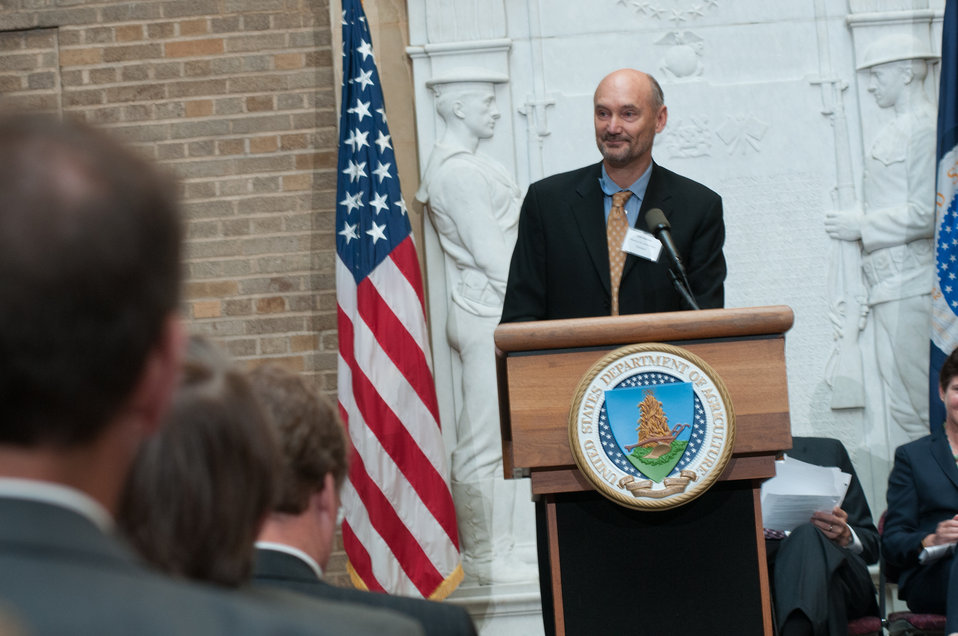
Alliance for Green Heat, President John Ackerly, speaks during the U.S. Department of Agriculture (USDA) Wood Energy Memorandum of Understanding, and awarded wood energy grants announcements event, at the USDA Headquarters, in Washington, D.C., on Wednesday, September 11, 2013. Signing the MOU are partnership leaders Biomass Thermal Energy Council, Executive Director Joseph Seymour; Alliance for Green Heat, President John Ackerly, USDA Agriculture Deputy Secretary Krysta Harden; Pellet Fuels Institute Executive, Director Jennifer Hedrick; Biomass Power Association, President and CEO Bob Cleaves, and Secretary Thomas Vilsack who signed it earlier. Moderating the event is Under Secretary for Rural Development Doug O’Brien.
The partnership agreement focuses on promoting wood energy nationwide as a means to address fire risks, bolster rural economic development, improve air quality, and help meet the Obama Administration’s renewable energy and energy efficiency goals. These organizations support the use of wood energy across the scale of users – from residential users, to commercial and intuitional facilities, to industrial production of heat and or electricity to drive businesses and feed the electrical grid.
Under the terms of the five grants announced by Deputy Secretary Harden, private, state and federal organizations will work together to stimulate the development of additional wood energy projects in their states. Collectively, $2.9 million will be spent o this effort -- $1.1 million on federal funds and $1.8 million in non federal funds. For more information o0n the cooperative agreement program, visit na.fs.fed.us.werc/wood-energy/ USDA Photo by Lance Cheung.